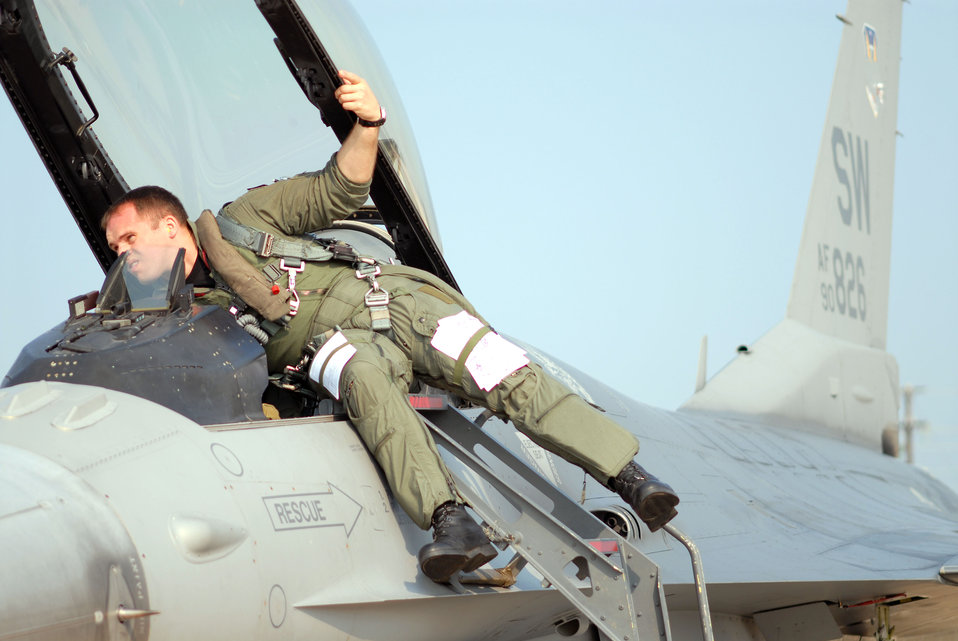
Dynamic Weasel keeps pilots sharp

Capt. Ben Russo does a pre-flight check on his F-16 Fighting Falcon before a mission supporting Operation Dynamic Weasel on Thursday, June 29, at Shaw Air Force Base, S.C. The exercise features various aircraft imitating combat operations in Southwest Asia. Captain Russo is assigned to the 77th Fighter Squadron.